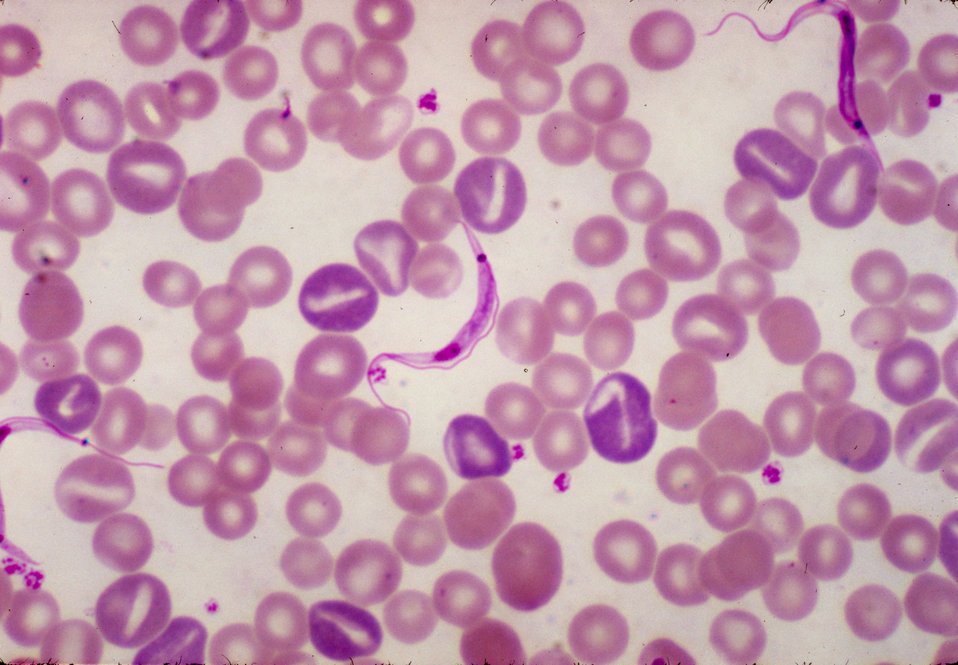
This is a micrograph of a rat blood smear revealing Trypanosoma lewisi parasites using a Giemsa stain technique.